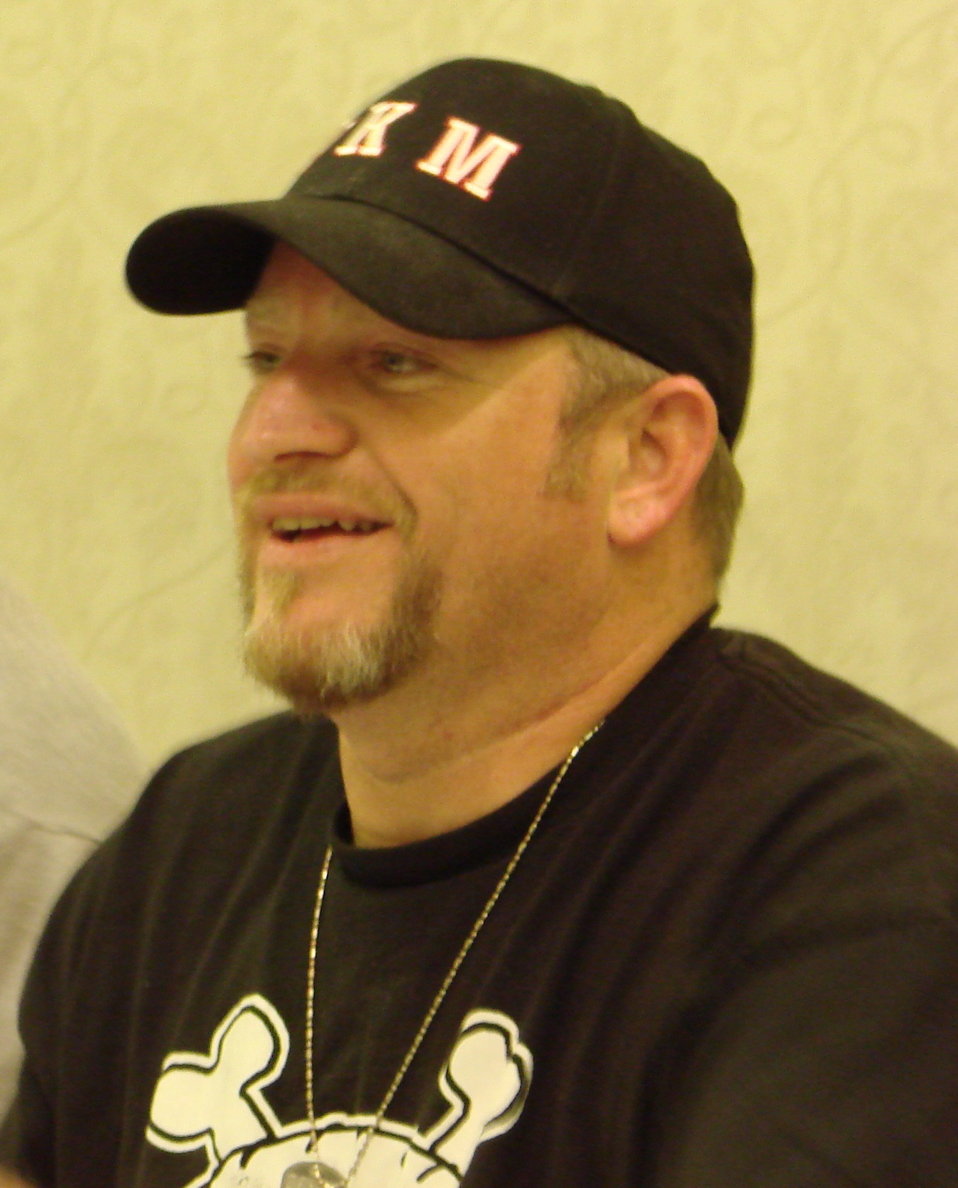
B.G. James at TNA Lockdown fan InterAction.